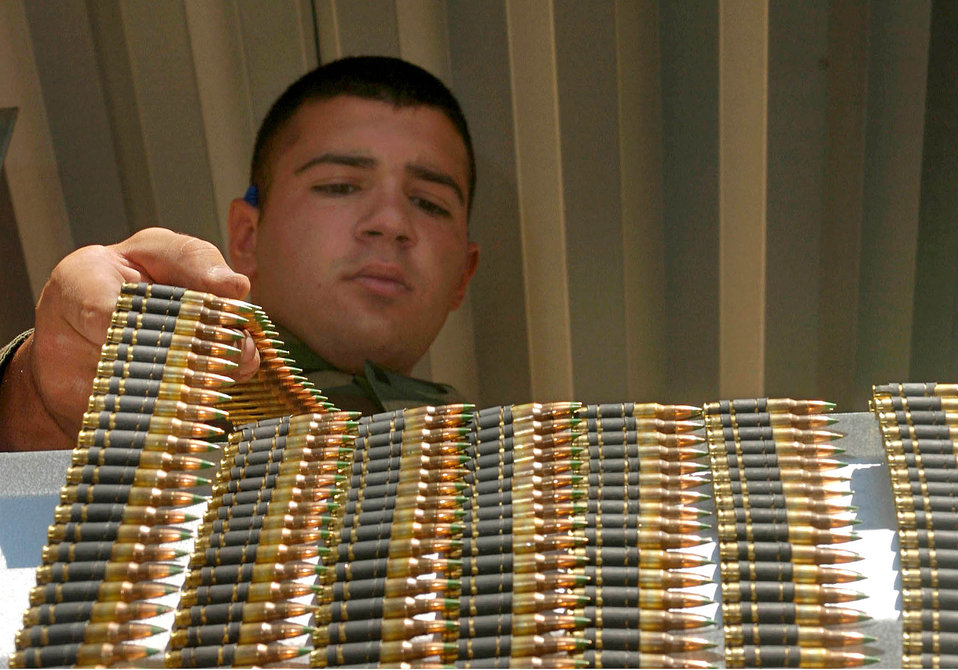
Gather round

FORT HUACHUCA, Ariz. - Airman 1st Class Adam Dermish gathers rounds for the M-240B on the firing range here while preparing for the Defender Challenge competition. The competition takes place Oct. 10 to 16 at Camp Bullis near San Antonio. Dermish is assigned to the 48th Security Forces Squadron at Royal Air Force Lakenheath, England. The U.S. Air Forces in Europe team practiced in the hot Arizona climate before traveling to Texas.